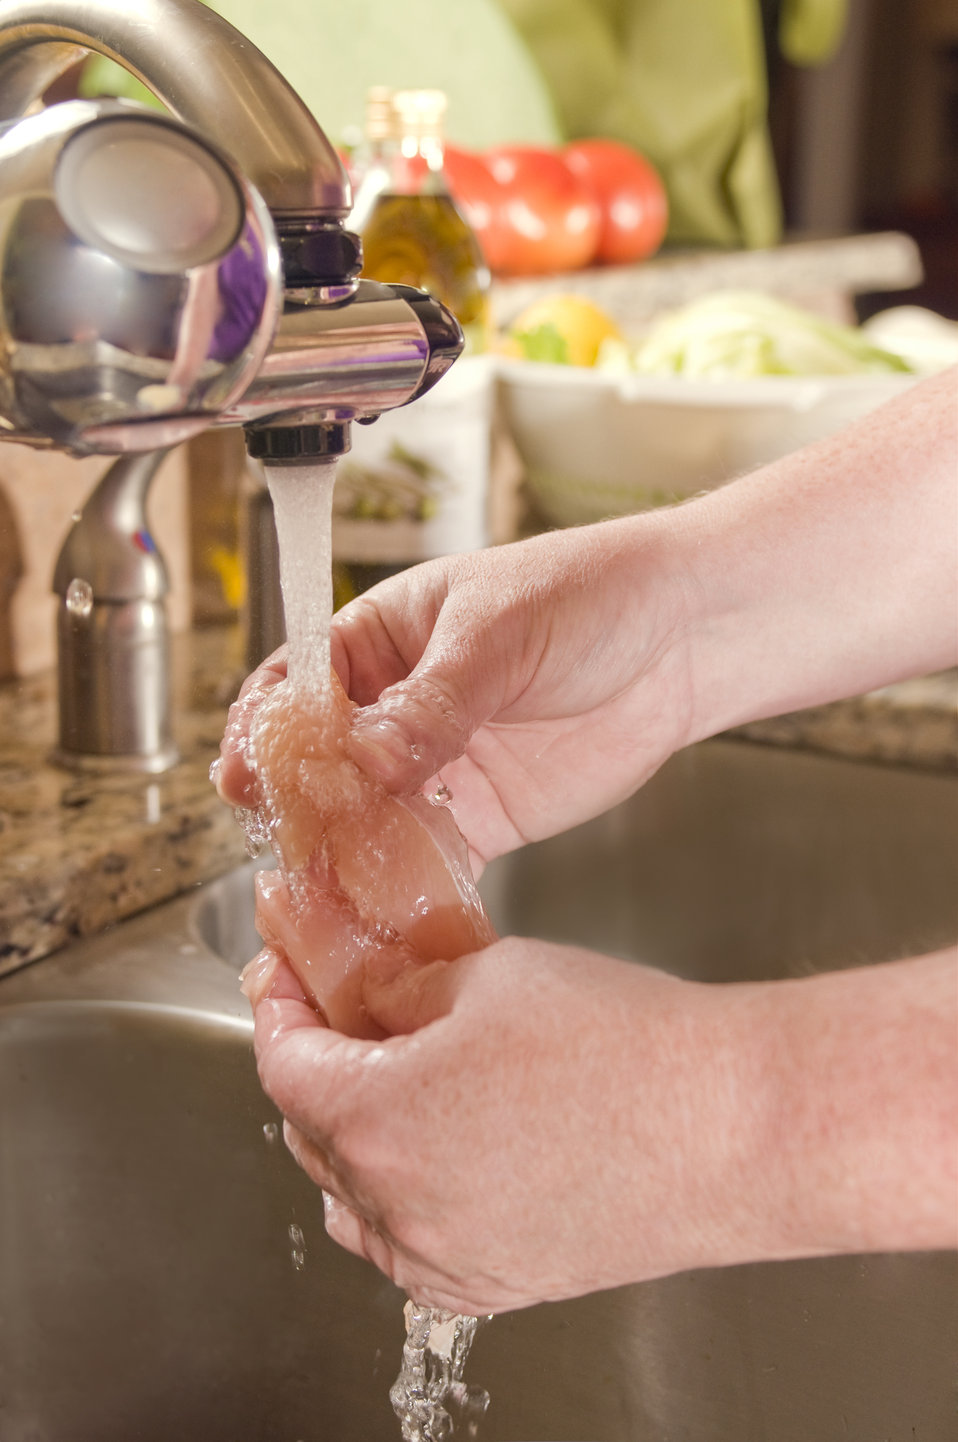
Here we see the hands of a cook in the process of thoroughly washing some newly-purchased deboned chick breast meat beneath a kitchen sink faucet prior to adding various seasonings.